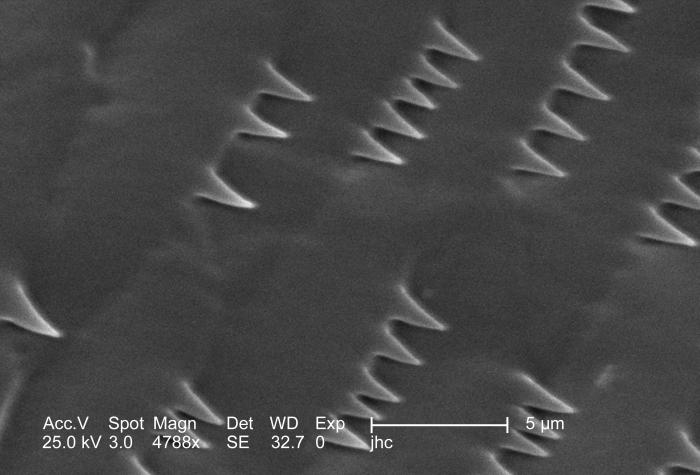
Magnified 4788x, this 2006 scanning electron micrograph (SEM) depicted an enlarged view of the chitinous, exoskeletal surface of a male louse, Pediculus humanus var. corporis. In this particular view, the exoskeletal adornments are few, consisting of small, spike-like structures. Quite often the shape and size of these skeletal adnexae are quite complex, with forms following functions, which are just as varied. The exoskeleton is composed of chitin, a molecule made up of bound units of acetylglucosamine, which is joined in such a way as to allow for increased points at which hydrogen bonding can occur. In this way chitin provides increased strength, and durability as an exoskeletal foundation.